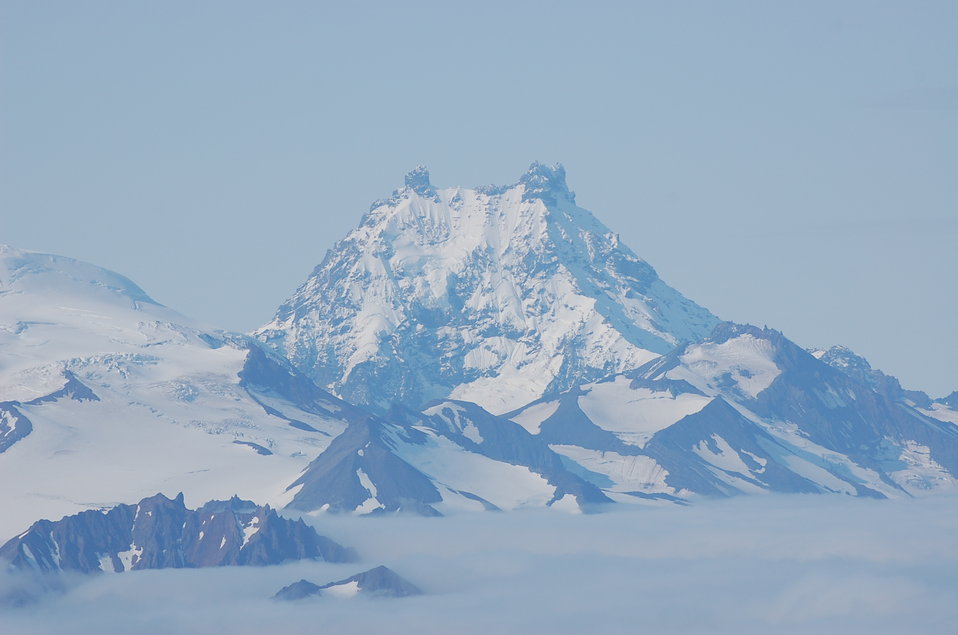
Isanotski Volcano

Unimak Island, Alaska Maritime National Wildlife Refuge